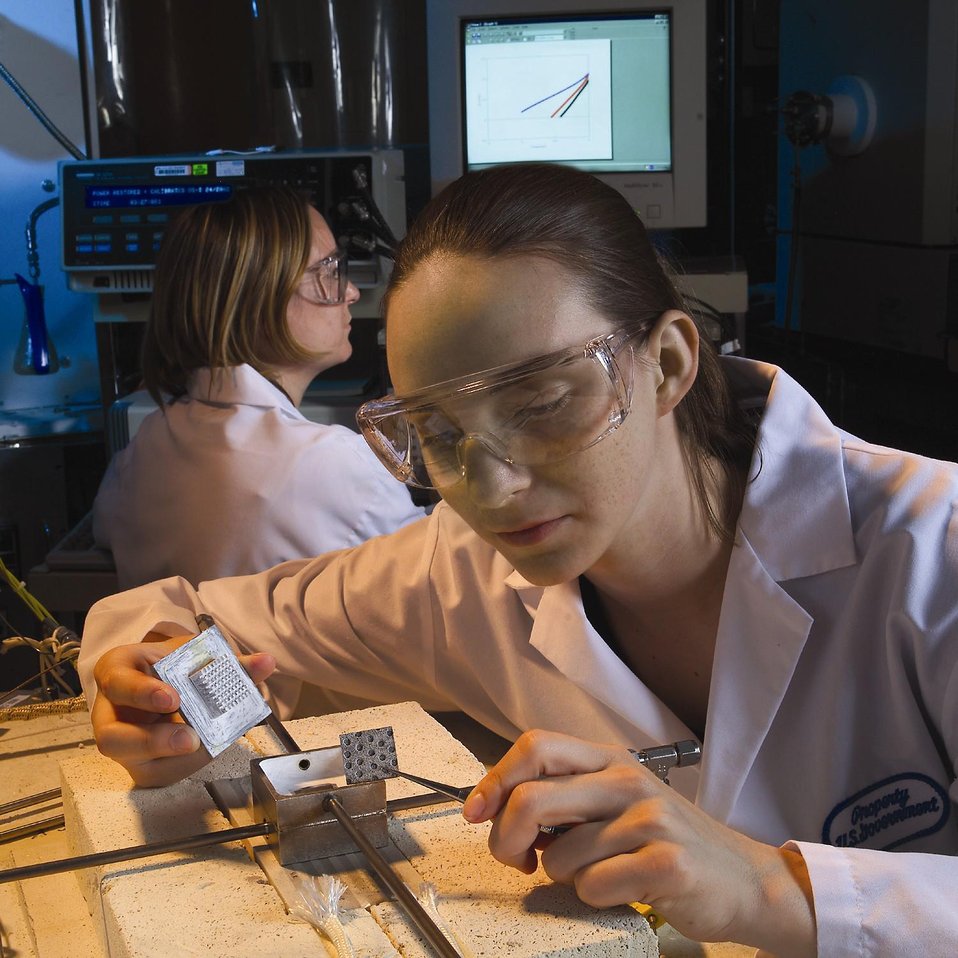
ARGONNE CHEMISTS TESTING TUFFCELL, AN ARGONNE DEVELOPED SOLID-OXIDE FUEL CELL.

A CRITICAL MEASURE OF A FUEL CELL'S USEFULNESS IS ITS POWER OUTPUT AT VARIOUS ELECTRICAL LOADS WHEN SUPPLYING FUEL (ANODE GAS) AND OXIDANT (CATHODE GAS) TO THE CELL. A RUGGED, SOLID-OXIDE FUEL CELL DEVELOPED AT ARGONNE, CALLED TUFFCELL, MAY PROVIDE A CLEAN, AFFORDABLE ALTERNATIVE TO THE NOISY, EMISSIONS-PRODUCING OVERNIGHT IDLING OF TRACTOR-TRAILER TRUCKS. ITS DESIGN FEATURES METAL SUPPORTS FOR HIGHER MECHANICAL STRENGTH, EASIER FABRICATION AND INCREASED PERFORMANCE, AT A LOWER COST THAN CURRENT SOLID-OXIDE FUEL CELLS.